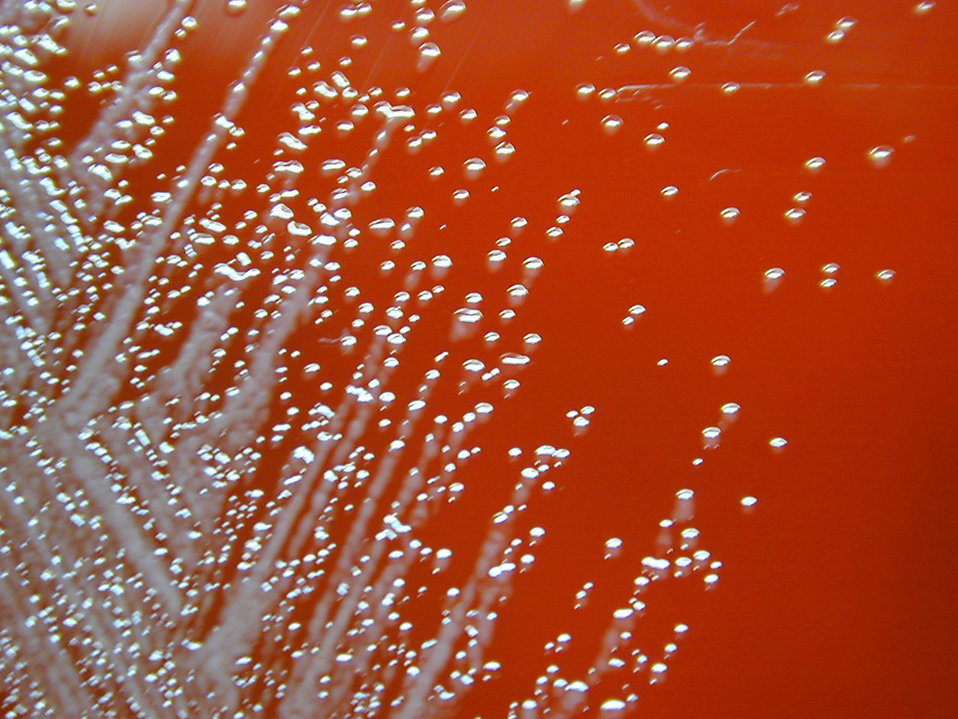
Burkholderia pseudomallei grown on sheep blood agar for 24 hours.